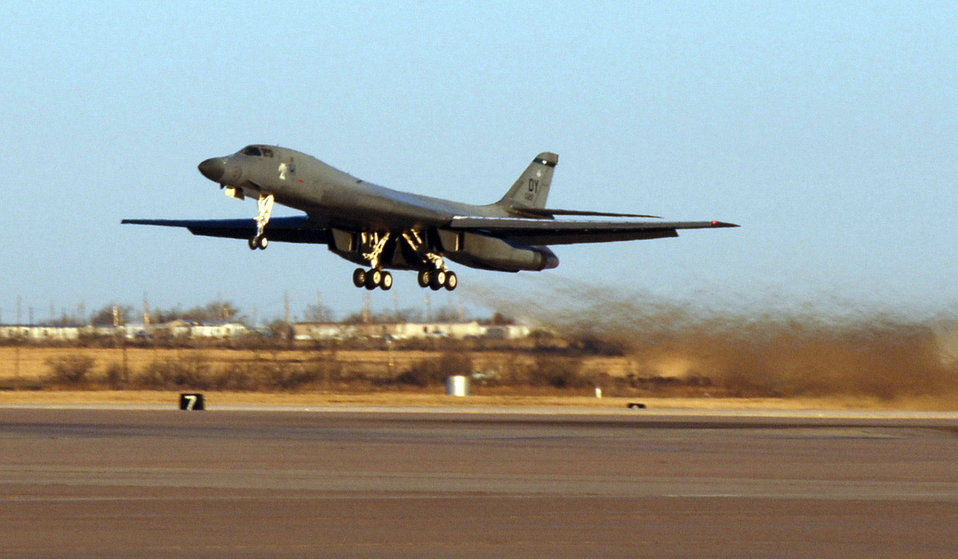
B-1s at the ready

DYESS AIR FORCE BASE, Texas (AFPN) -- A B-1B Lancer takes off on a simulated deployment during the base’s operational readiness exercise. The aircraft is with the 9th Bomb Squadron here known as the “Bats.” The exercise prepares Airmen for the upcoming operational readiness inspection and wartime deployments.